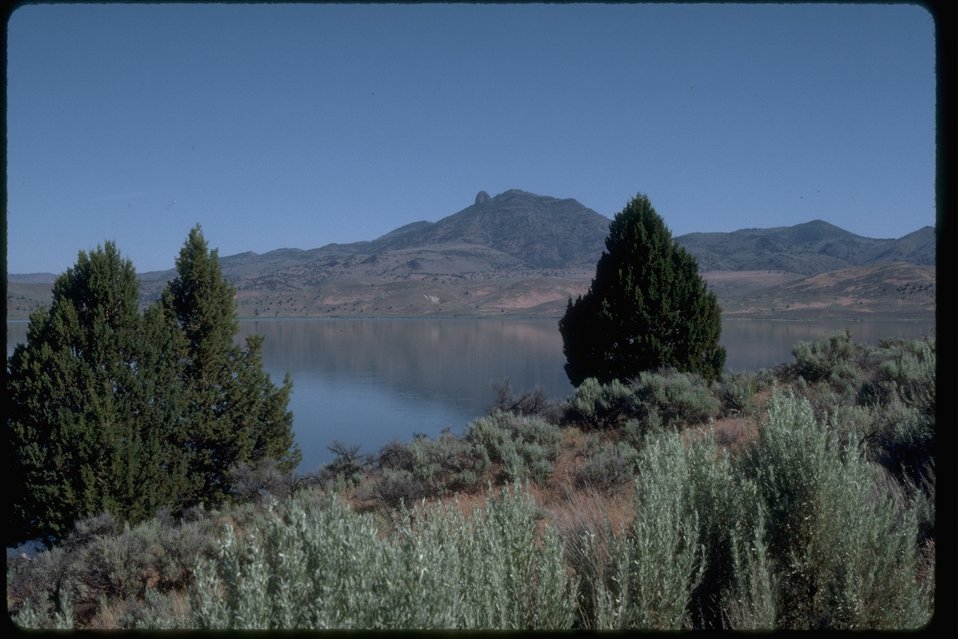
The Beulah Reservoir in the Castle Rock Wilderness Study Area. OR 3-18